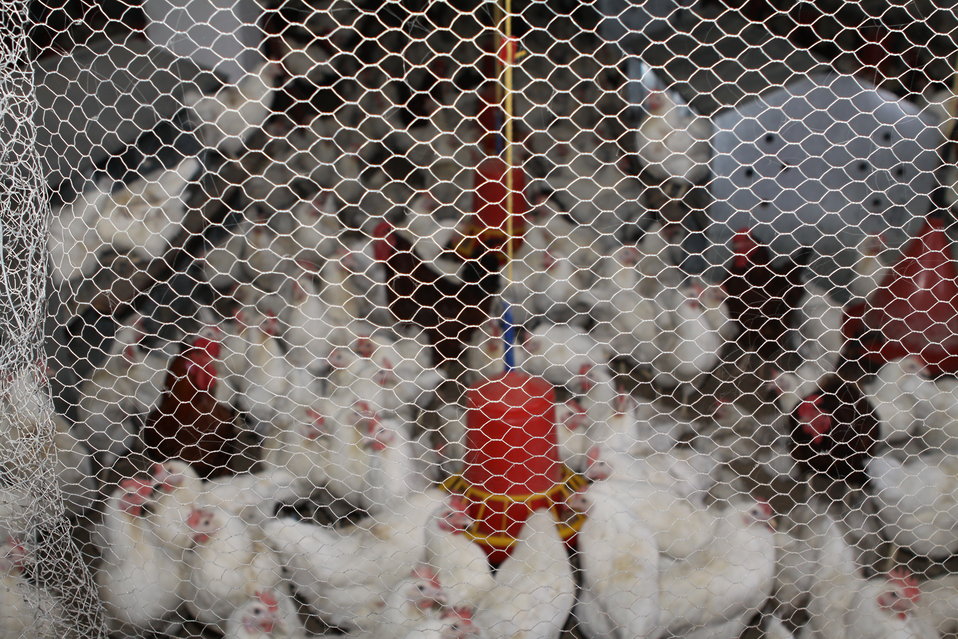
Bolan Poultry Farm